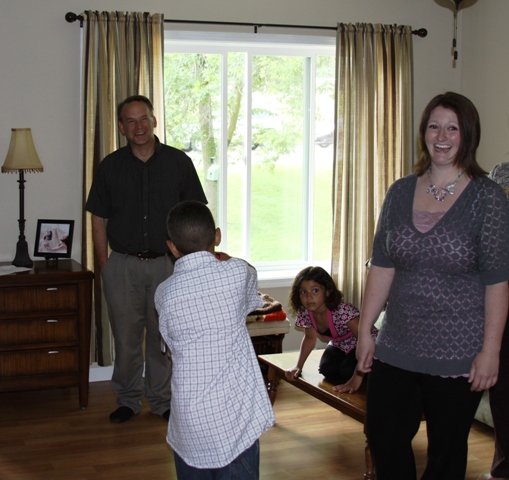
6-14 Home Month

Homeowner Cassandra Braford (right) welcomed U.S. Department of Agriculture (USDA) Rural Development area specialist Allan Cowles (left) and Habitat for Humanity and Alexandria Community & Technical College representatives to her home in Douglas County, MN on June 14, 2012 to celebrate RD’s Homeownership Month. Cassandra’s two children, Riyada and Ramsey, play in the living room of their new home. Cowles worked with Cassandra to help her obtain a new home loan.